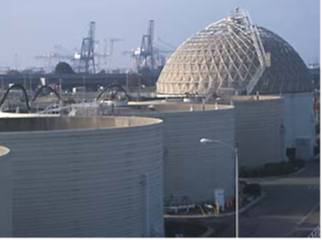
Anaerobic Digesters

Through anaerobic digestion, bacteria can digest the food waste to produce methane, a valuable energy source when captured.